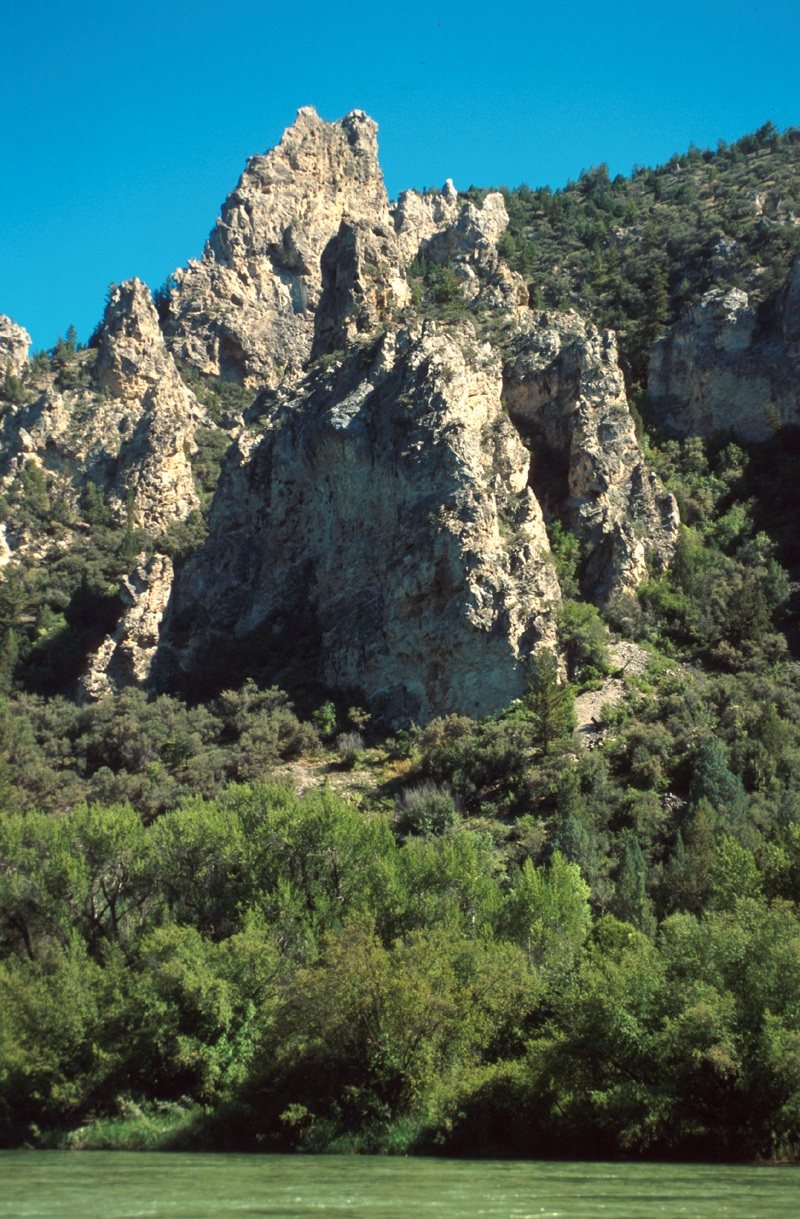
South Fork of the Snake River